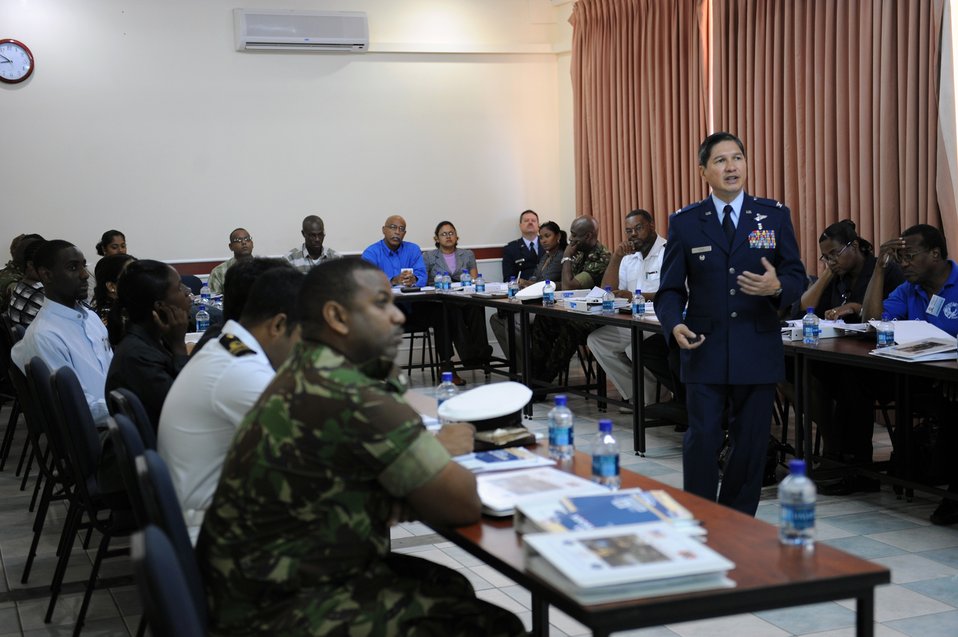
DIMO

Col. John T. Cinco teaches a disaster planning and mass casualty response class for primary care providers Jul. 19, 2010, in Port of Spain, Trinidad and Tobago. Colonel Cinco is the medical director for the Defense Institute for Medical Operations, United States Air Force School of Aerospace Medicine, Brooks City-Base, Texas.